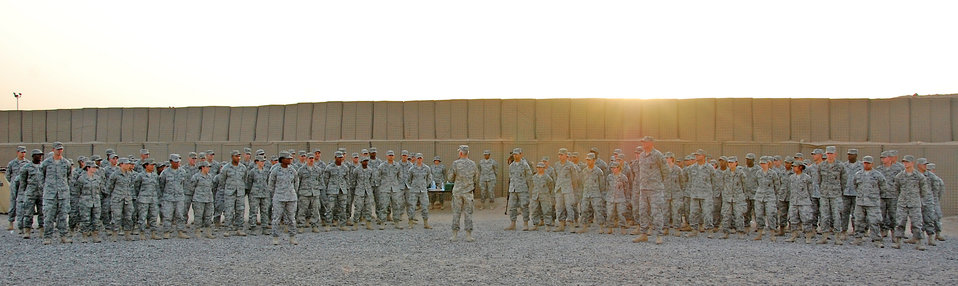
Airmen hand over visitation operations at Camp Bucca

Members of the 887th Expeditionary Security Forces Squadron stand in formation at an end-of-tour ceremony Aug. 10 at Camp Bucca, Iraq. The Airmen were recognized for their work in support of visitation operations.